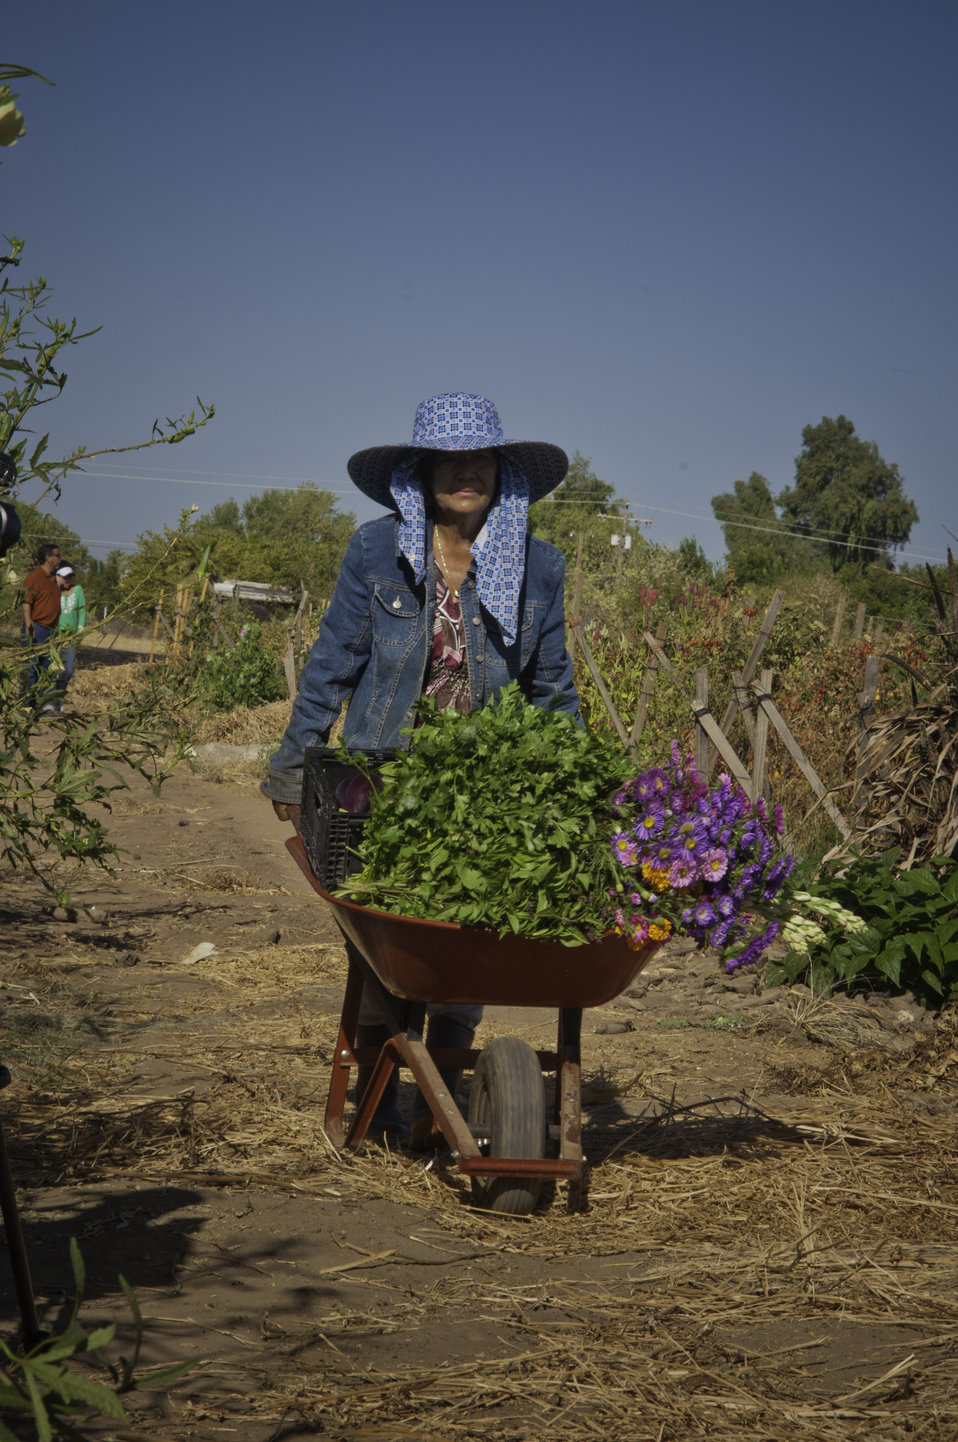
May Young Vu a Hmong farmer taking basil, flowers and eggplant harvested in the morning on her farm May's Flower's in Sanger, California for the farmers market in the afternoon May Young Vu a Moung farmer taking opo squash harvested in the morning on her farm May's Flower's in Sanger, California to be packed for the farmers market in the afternoon on Thursday, August 29, 2013.